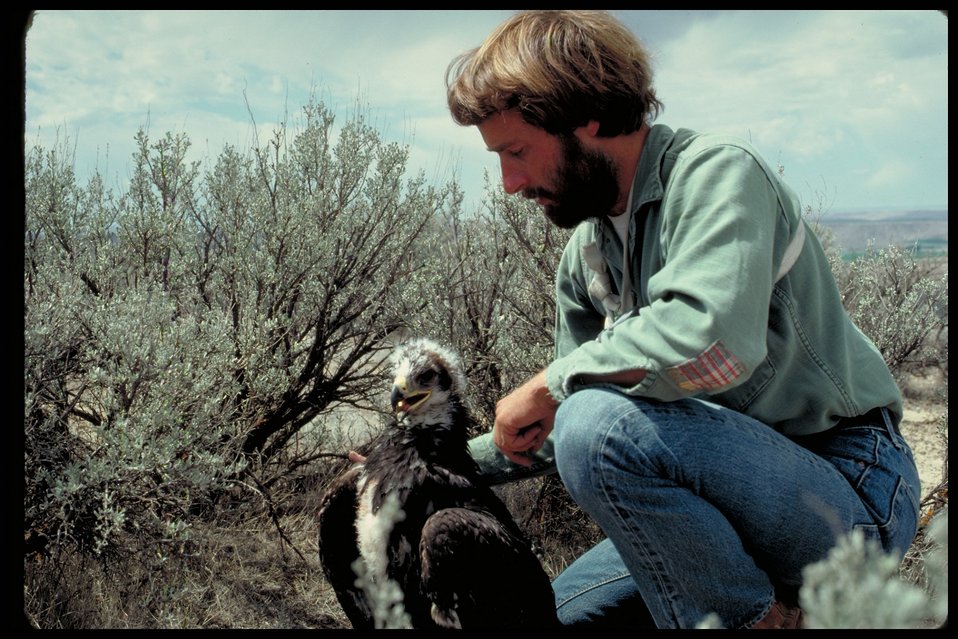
Eagle Birds of Prey National Conservation Area BOP Owyhee Field Office LSRD Lower Snake River District